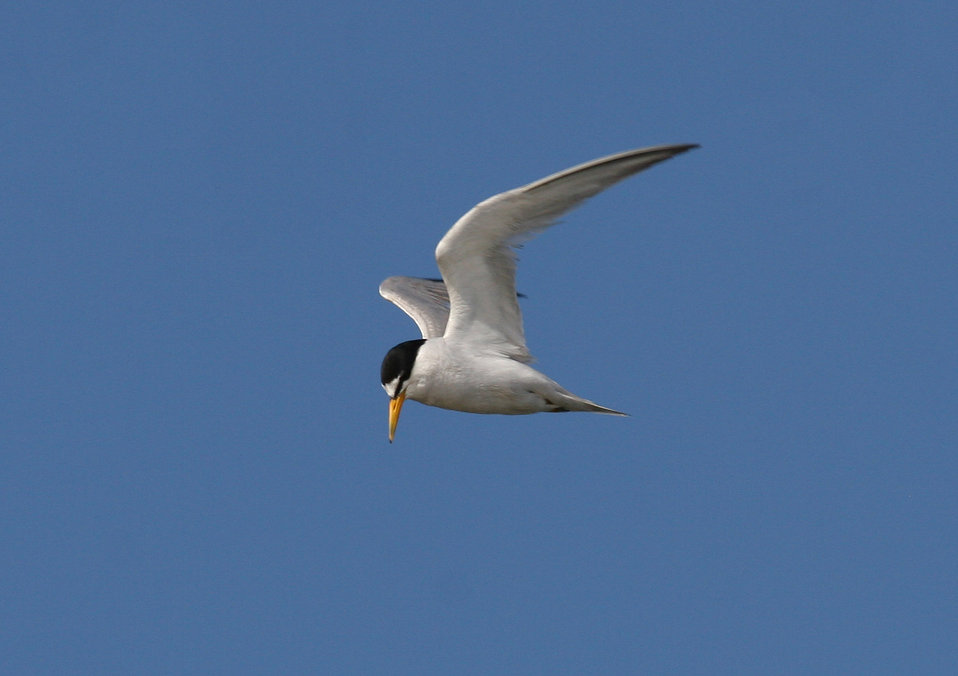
California least tern in flight